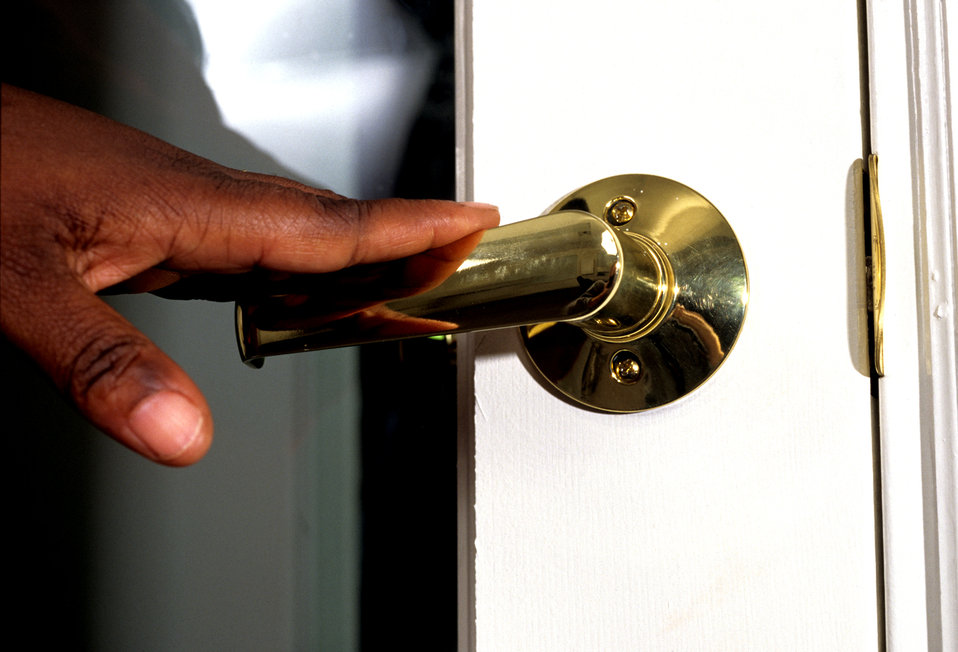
This 1997 image was one of two (see PHIL# 9212) depicting a close-up view of a brass finished, levered door handle being opened by an opened hand's fingertips, and a clenched hand as shown in PHIL# 9212. These photographs showed two of the ways lever handles can be useful, without requiring strong hand gripping, or the ability to grasp tightly, as would be the case with a round knob, or when hands are full of packages. By designing this simple door handle to accommodate those with mobility impairments, the overall design became even more accommodating to all, which is really the challenge, and the goal of a universally designed facility.